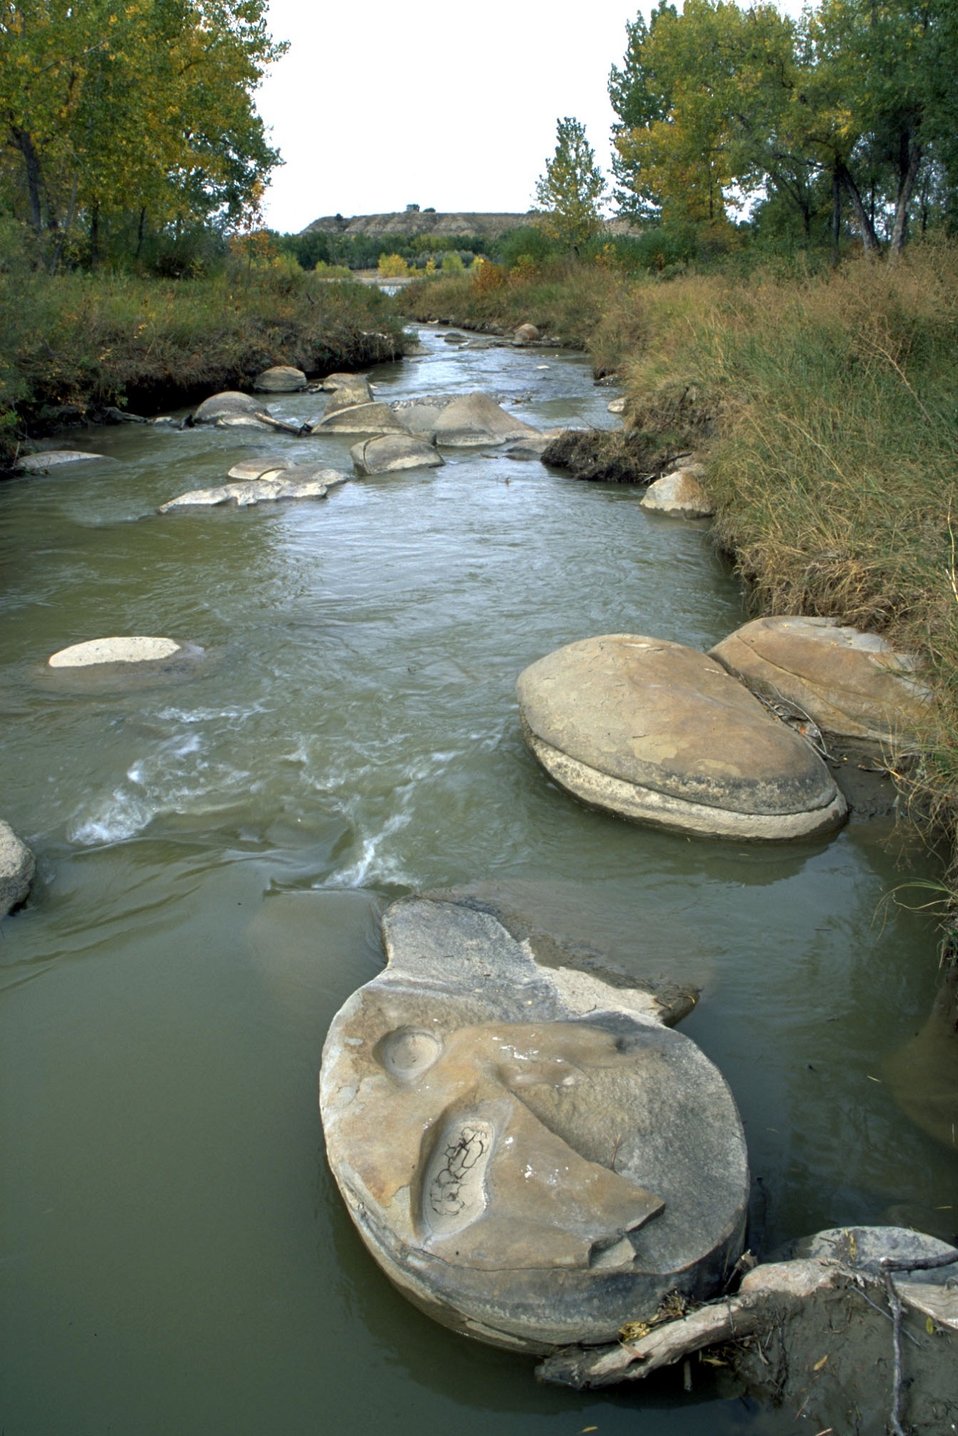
Large rocks in Jones Creek at Matthews Recreation Site